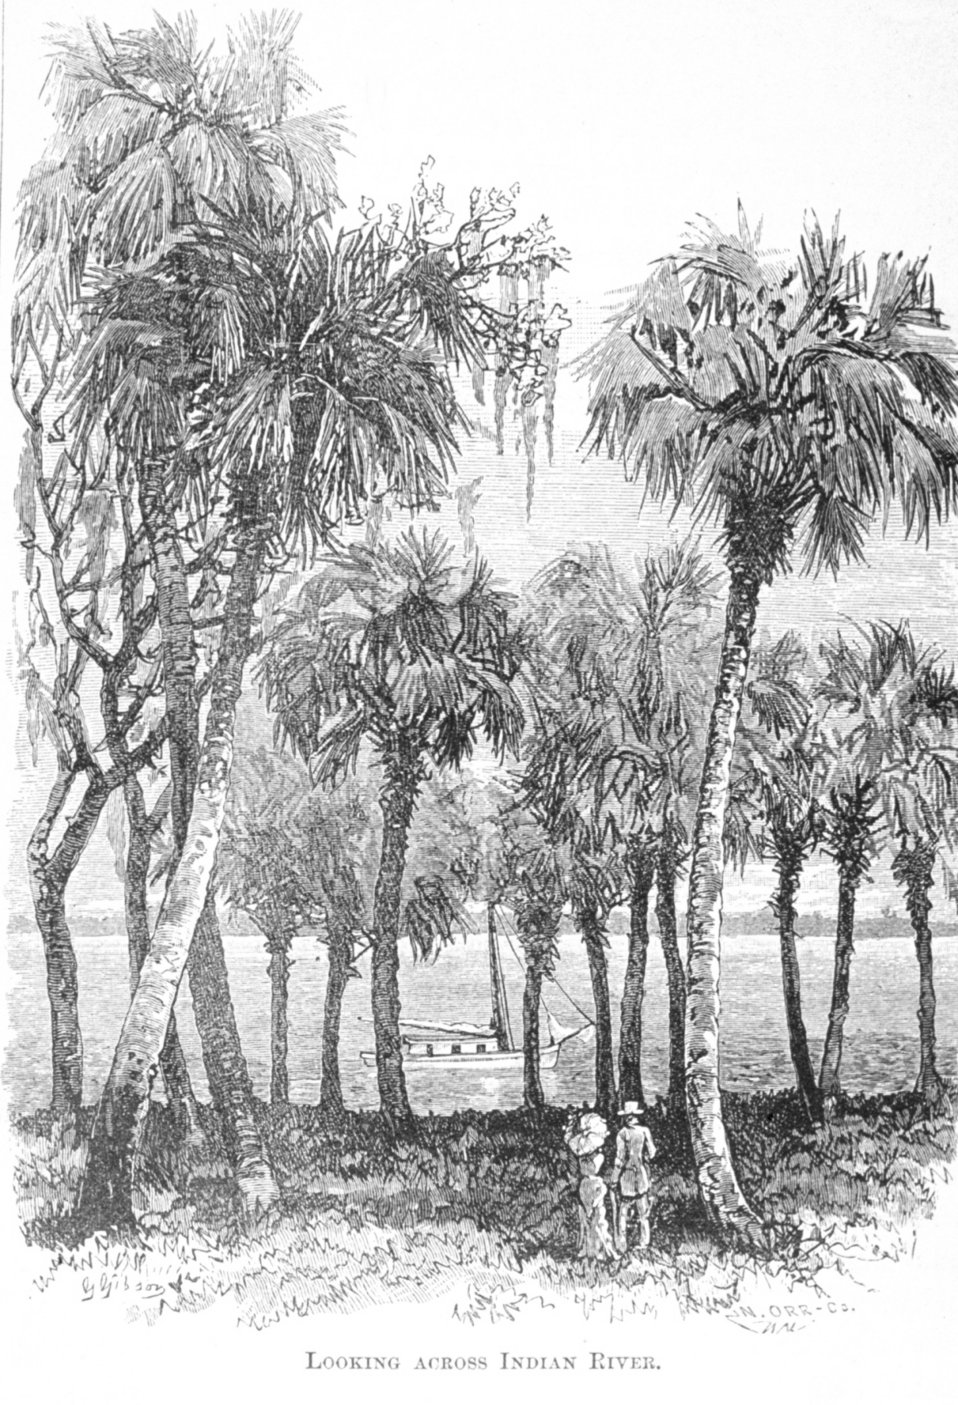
Looking Across Indian River - in 'Florida for Tourists, Invalids, and Settlers' by George M. Barbour, 1881. Library Call No. F316 .B23 1881.